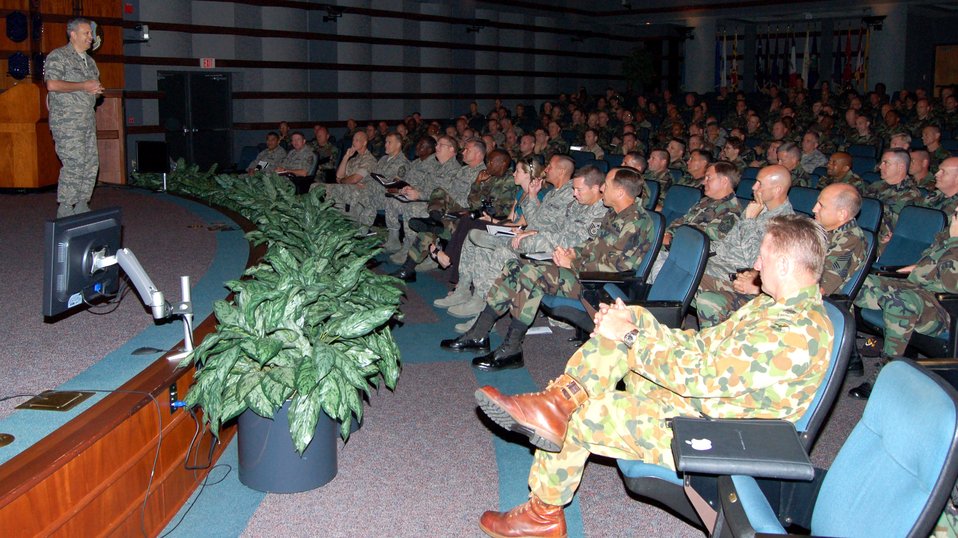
Enlisted leaders gain from summit outcome

Brig. Gen. Michael A. Longoria speaks about leadership in combat to participants of the Senior Enlisted Leader Summit July 23 at the Air Force Senior NCO Academy at Maxwell Air Force Base's Gunter Annex, Ala. General Longoria is the special assistant for Air Force Cyber Command issues to the director of plans and programs, Headquarters Air Combat Command at Langley AFB, Va.